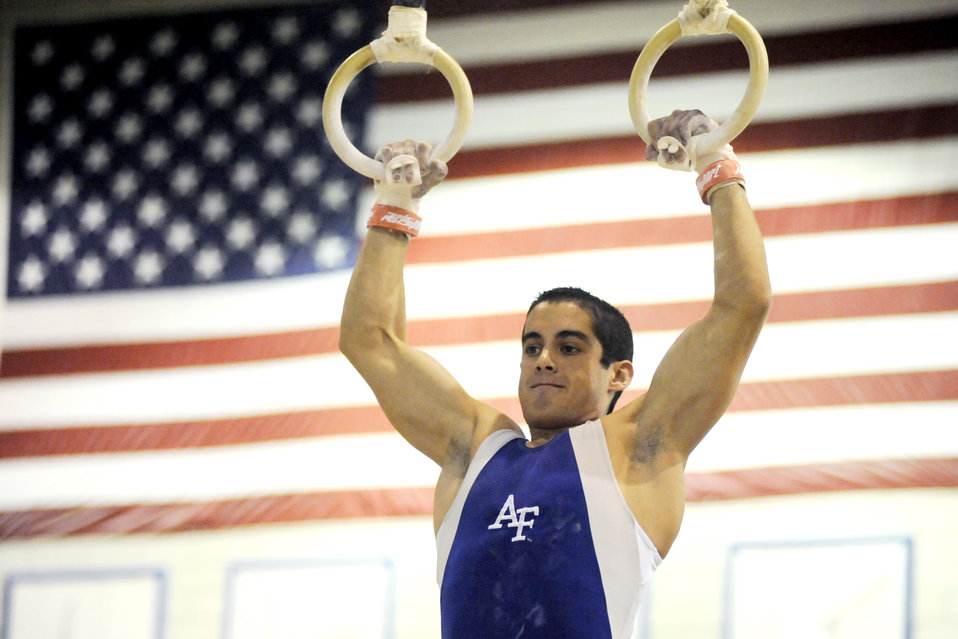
Falcon gymnasts lose in home final

Falcon freshman Travis Langham competes on the still rings during the Falcons home finale against Illinois-Chicago at the U. S. Air Force Academy's cadet gymnasium in Colorado March 7, 2010. Langham matched or set career-best scores in each of his events scoring a 14.35 on floor, 14.25 on still rings, 15.65 on Vault, and 13.95 on high bar. The Falcons set a new team record, beating their previous record of 342.55 which was set last year in Arizona, but fell to Illinois-Chicago 348.60 - 346.45.